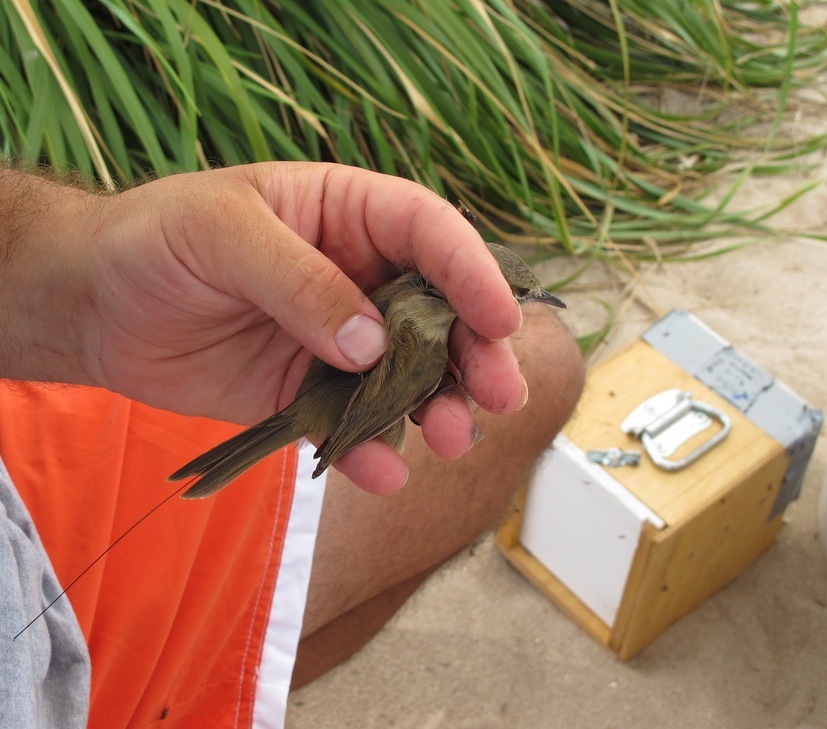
attaching a transmitter

Attaching a radio transmitter to a millerbird using a harmless temporary adhesive.
Laysan Island
Sept. 10, 2011